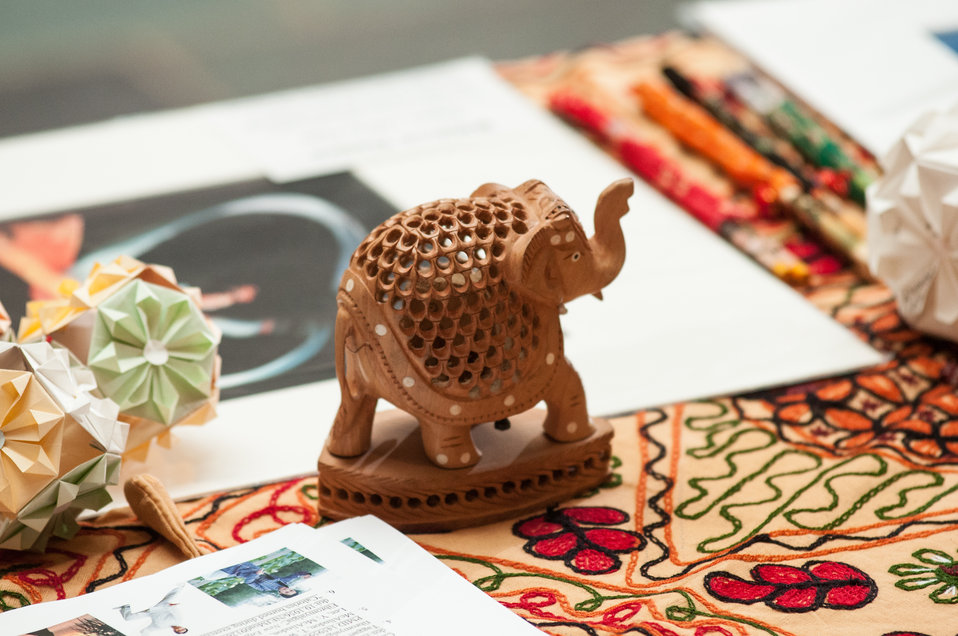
Various forms of Asian arts and crafts are displayed, during the U.S. Department of Agriculture (USDA) Asian Pacific American Heritage Month Observance program, at the USDA headquarters, Whitten Building patio, in Washington, D.C., on Thursday, May 23, 2013. This year’s theme is “Building leadership; Embracing the Cultural Values and Inclusions.”